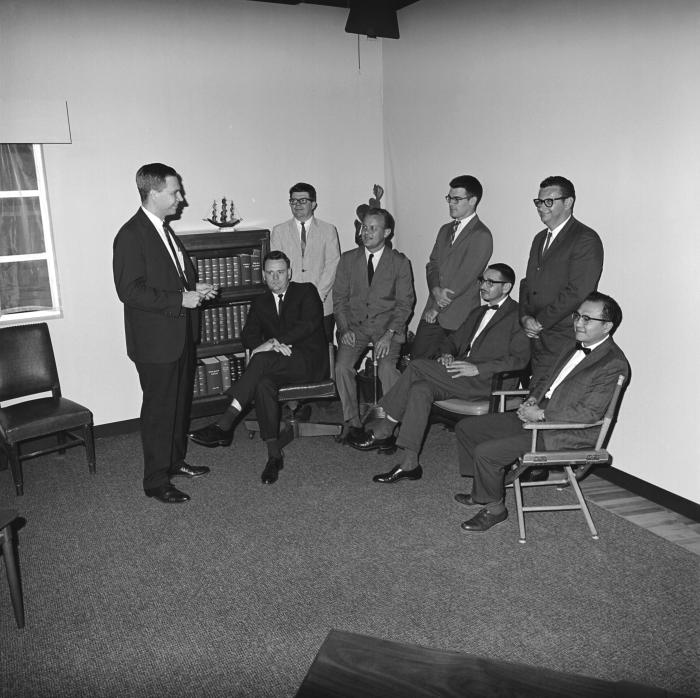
This 1966 image depicts some of the Smallpox Eradication/Measles Control Program staff members, who were gathered in a Centers for Disease Control and Prevention's (CDC) Atlanta, Georgia office. The efforts put forth by this group of epidemiologists had an extremely positive global impact upon these viral infections. Leading group was Dr. Donald A. Henderson, standing at far left, who headed the international effort during the 1960s to eradicate smallpox.